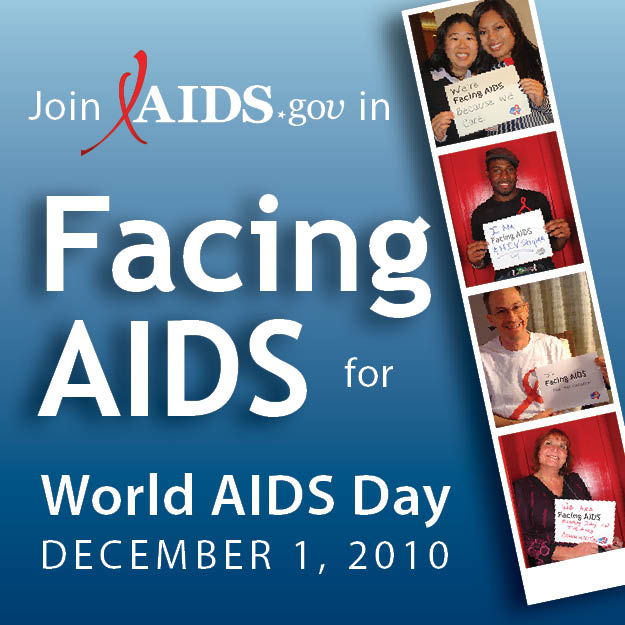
Facing AIDS 2010